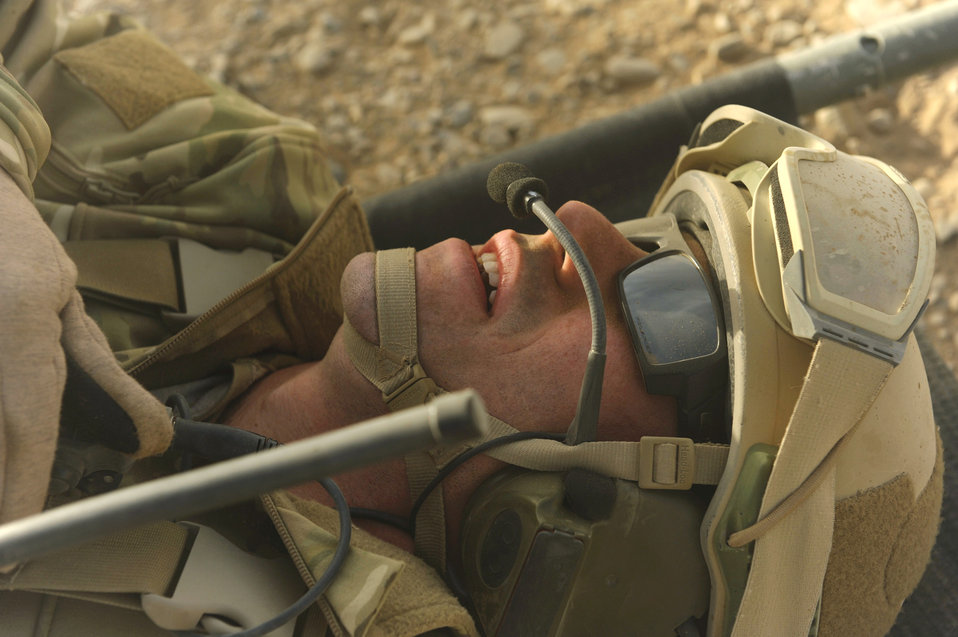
CSAR Airmen airlift wounded Soldier

A simulated casualty lies on a litter while awaiting pickup during a mass-casualty scenario Dec. 24, 2010, near Kandahar, Afghanistan. The scenario was planned as part of Tech. Sgt. Anthony Wood's qualification to become an element leader.